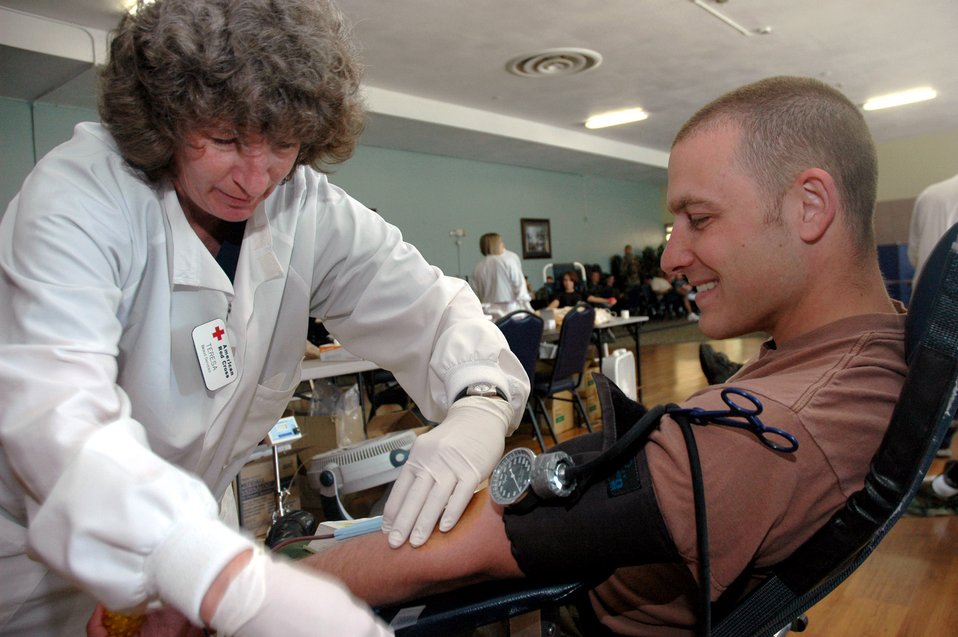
Mountain Home blood donations help wounded warriors

Teresa Maughan prepares Senior Airman Albert Pierce to donate blood during a blood drive at Mountain Home Air Force Base, Idaho. Mountain Home AFB members provided 25 pints of blood Jan. 23 to Walter Reed Army Medical Center in Washington, D.C., for wounded veterans returning from operations in Iraq and Afghanistan. The center, experiencing an acute shortage of blood, was able to provide critical care to returning veterans until their supplies were replenished. Ms. Maughan is an American Red Cross phlebotomist, and Airman Pierce is assigned to the 366th Equipment Maintenance Squadron.